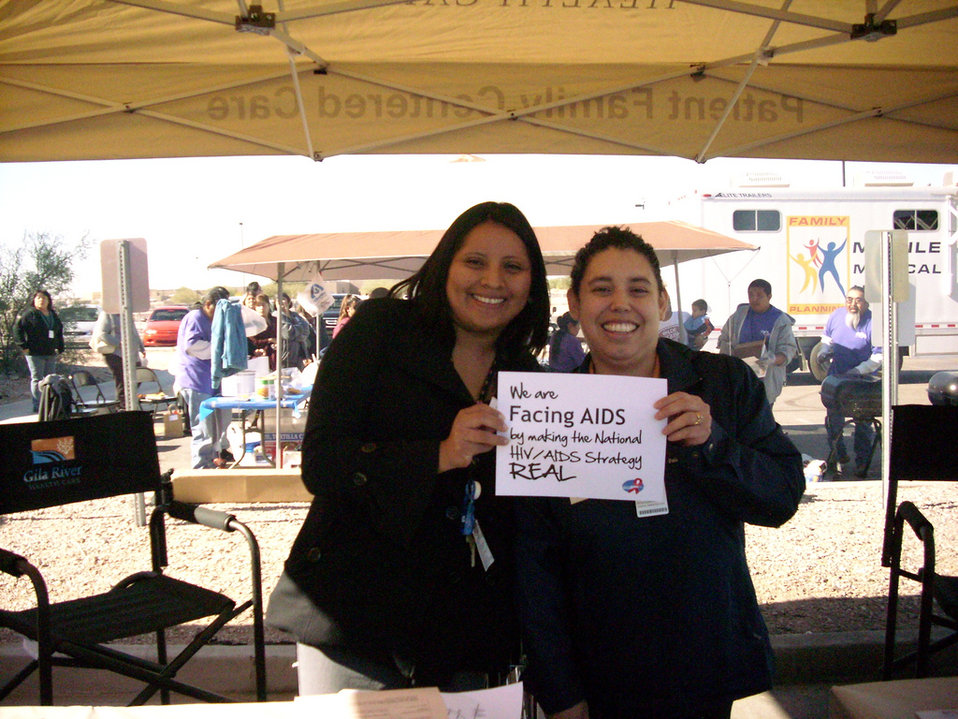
We are Facing AIDS through NHAS-09